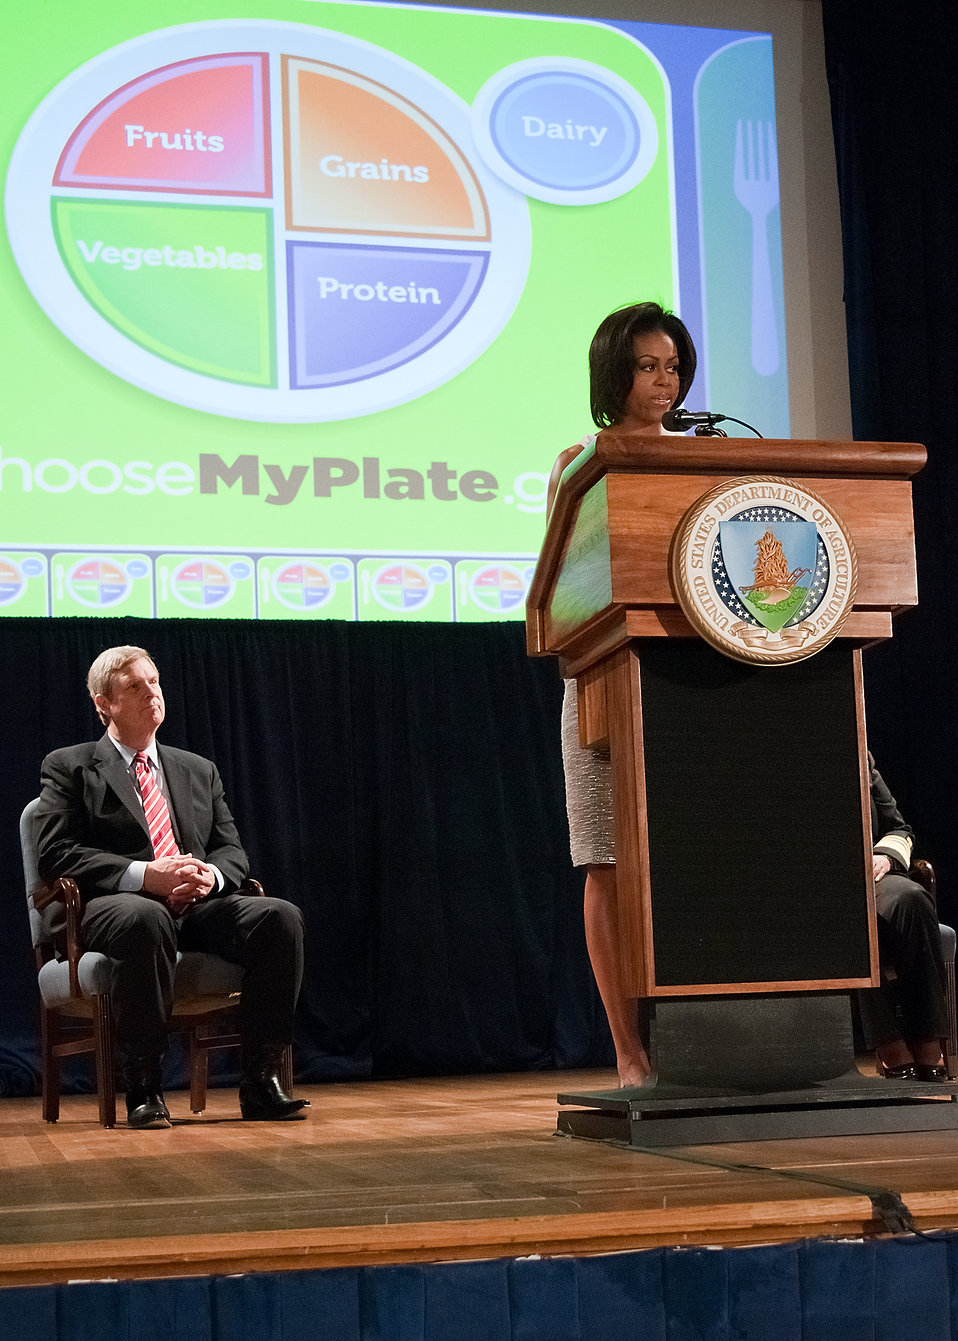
First Lady Michelle Obama unveiled the new food icon that will serve as a reminder to help consumers make healthier food choices at the United States Department of Agriculture (USDA), Thursday, June 2, 2011. Agriculture Secretary Tom Vilsack accompanied the First Lady at the launch. The White House Child Obesity Task Force called for simple advice to consumers with information to help them make healthy food choices. As a result USDA has introduced the new food icon to replace the MyPyramid image representing the food guide pyramid as the government’s primary food group symbol.